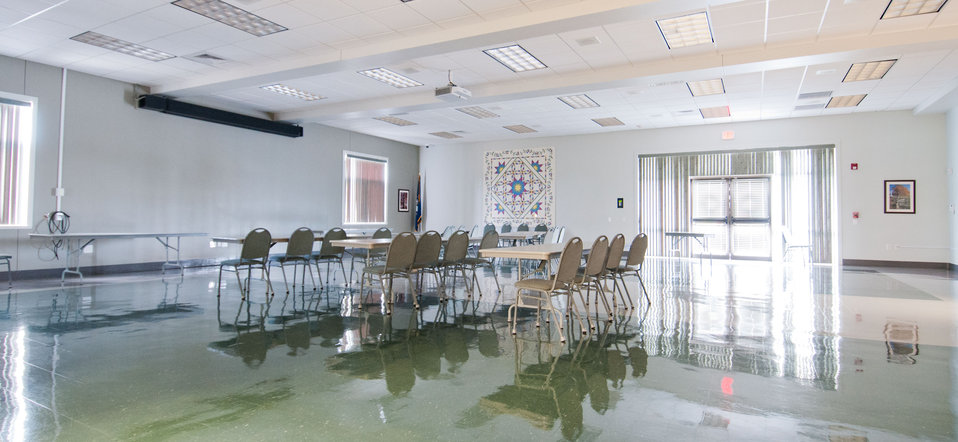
Multi-purpose room in the Education Center of the Bath County Agricultural Education and Marketing Center, Owingsville, KY, on Friday, July 15, 2011. The Center was the recipient of a $400,000 Rural Business Enterprise Grant. It has given farmers and producers from Bath and surrounding counties the opportunity to manufacture and market their locally grown and locally produced value-added and “Kentucky Proud” branded products, including but not limited to, fresh produce, artisan crafts and specialty food products. The Center is open year-round and allow residents to sell products in four different retail categories, including Kentucky products, regional crafts, “green” groceries and bakery/deli. Several producers expressed their gratitude for Rural Development’s assistance in making the center a reality. The project was made possible through American Recovery and Reinvestment Act of 2009 funding enacted by the 111th United States Congress in February 2009 and signed into law on February 17, 2009, by President Barack Obama.